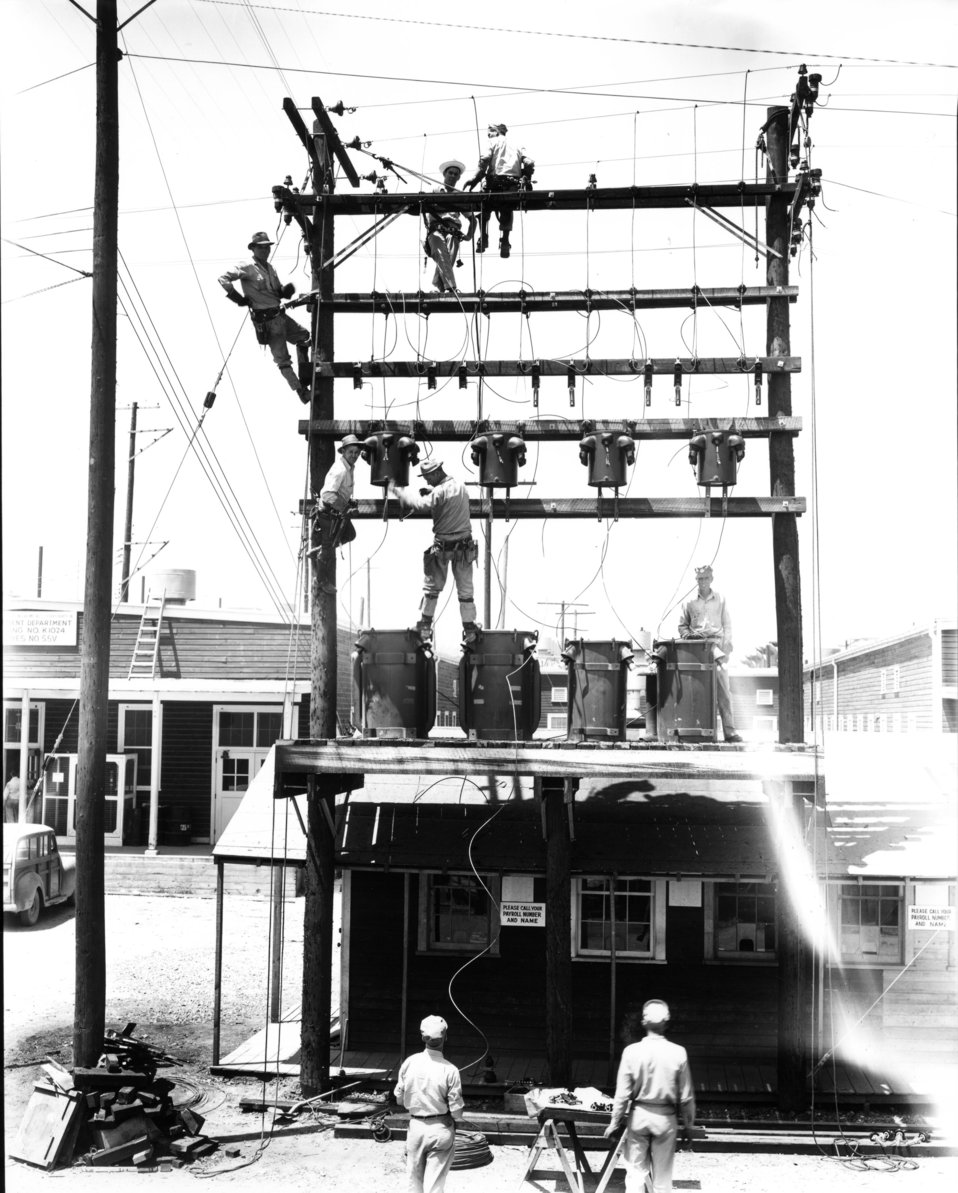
K-25 at Oak Ridge